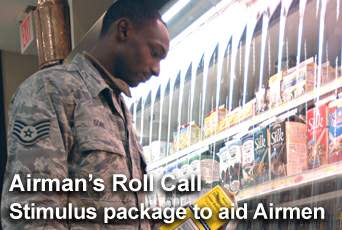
Airman's Roll Call: Stimulus package to aid Airmen

This week's Airman's Roll Call focuses on the effects of a $1.7 billion stimulus pacakge will have on the Air Force.